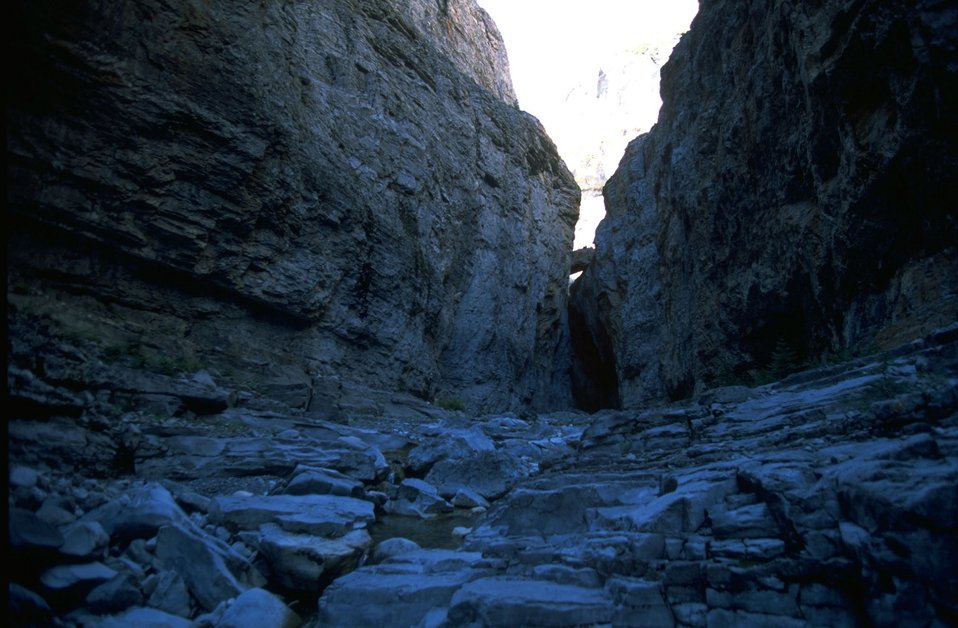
Looking west at Muddy Creek in the Rocky Mountain Front